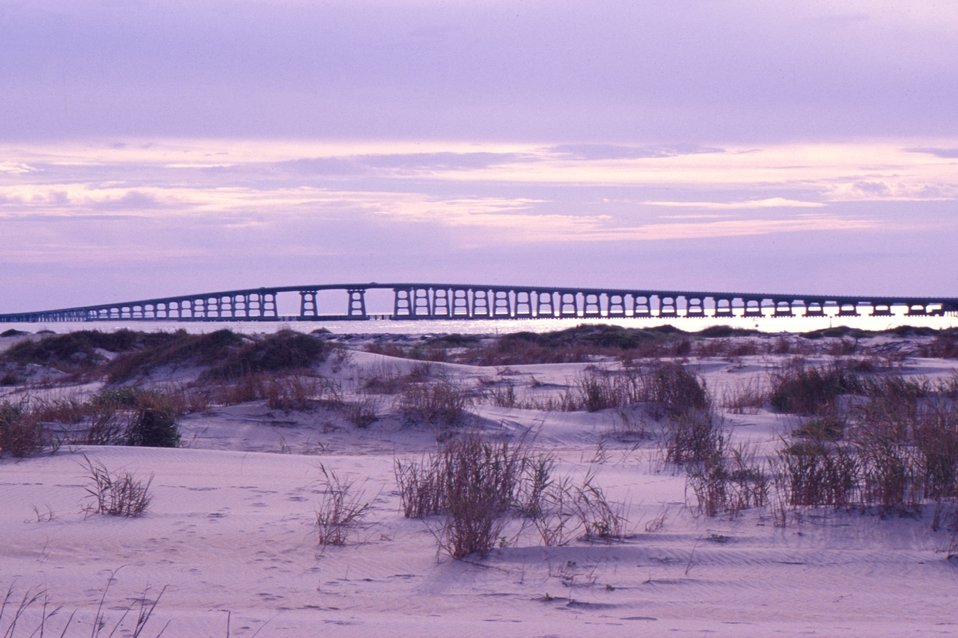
Bays and sounds around Nags Head, North Carolina, provide nurseries for hundreds of marine species.